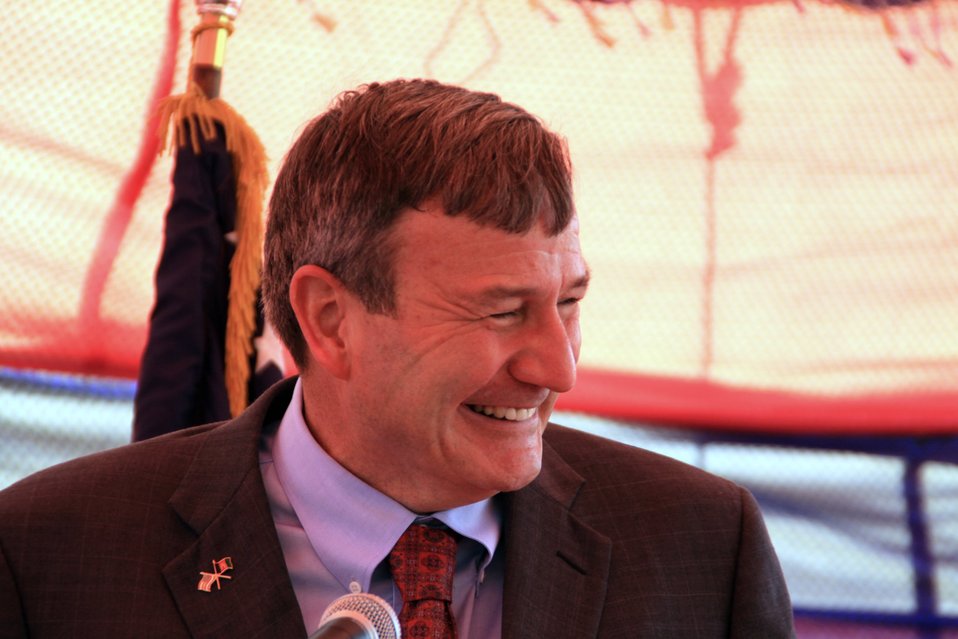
Badam Bagh Farm